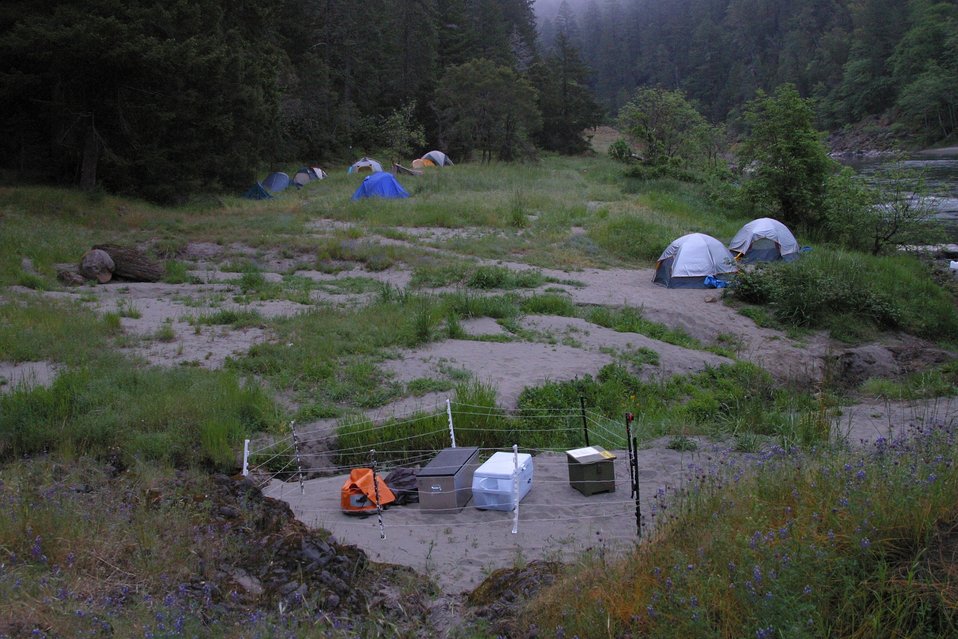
Wild section of the Rogue River from Grave Creek to Foster Bar May 19 to May 22.